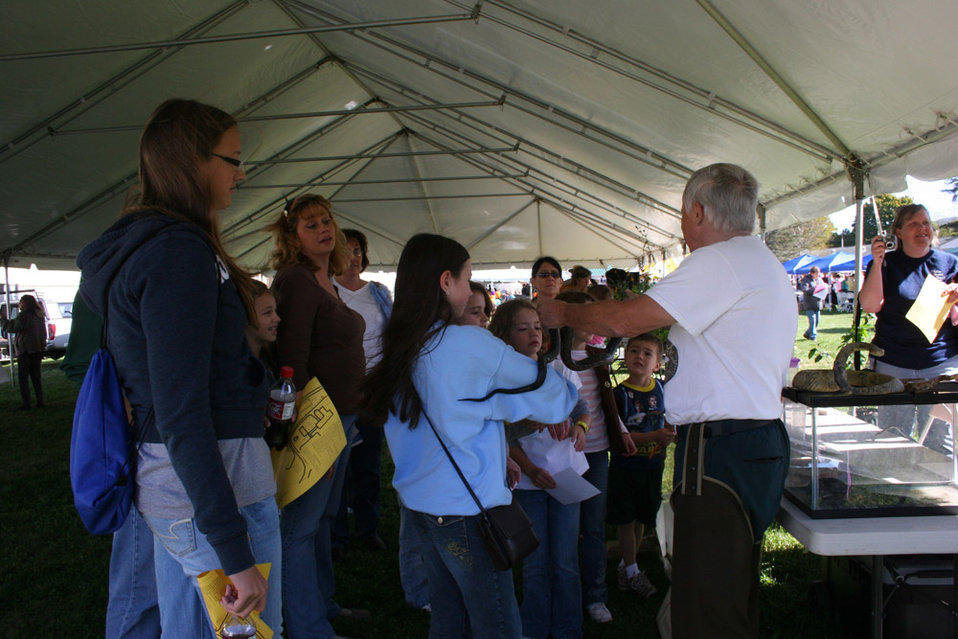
Freshwater Folk Festival (24)